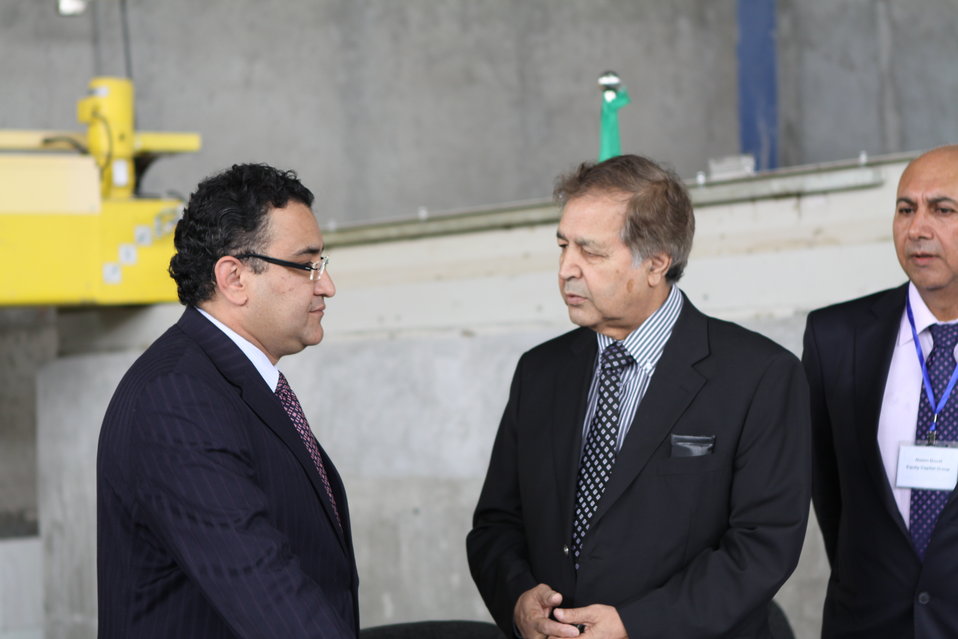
100525 Hirat Marble Conference 121